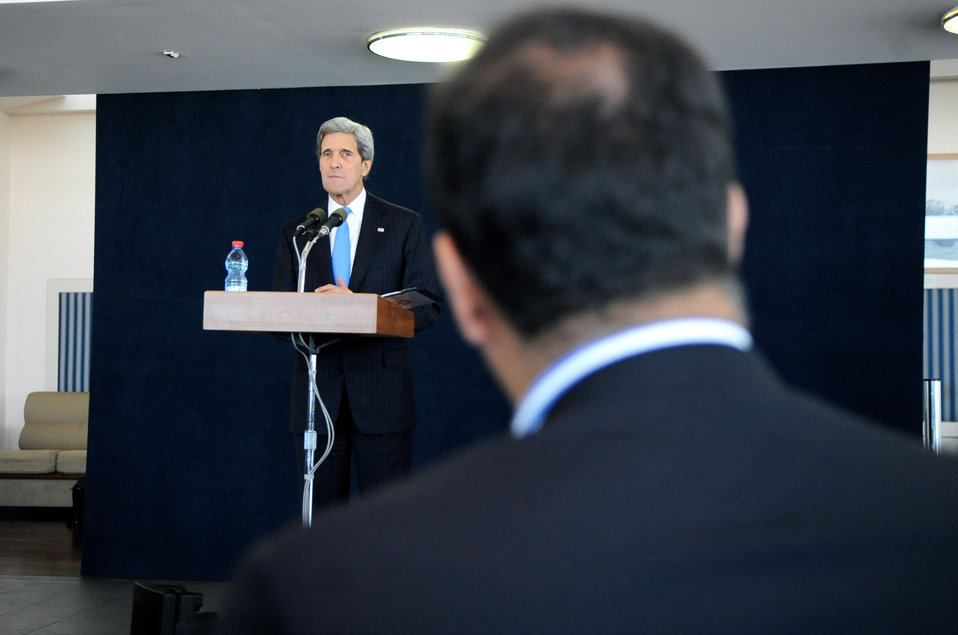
Secretary Kerry Listens as Reuters' Arshad Mohammed Asks a Question

U.S. Secretary of State John Kerry listens as Arshad Mohammed of Reuters asks him a question during a news conference in Tel Aviv, Israel, on May 24, 2013.